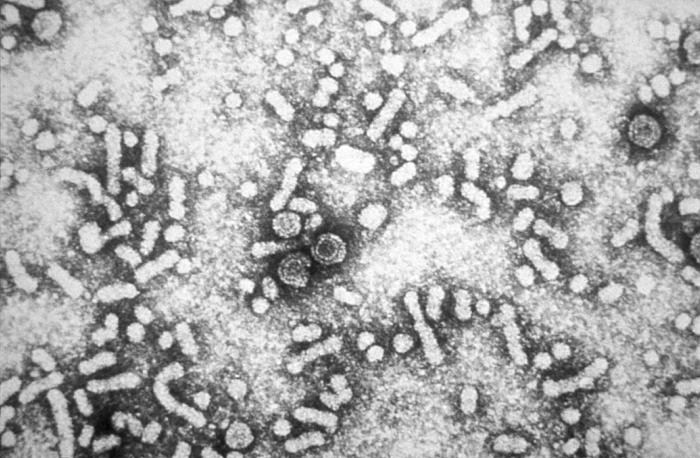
This electron micrograph reveals the presence of hepatitis-B virus HBV "Dane particles", or virions.